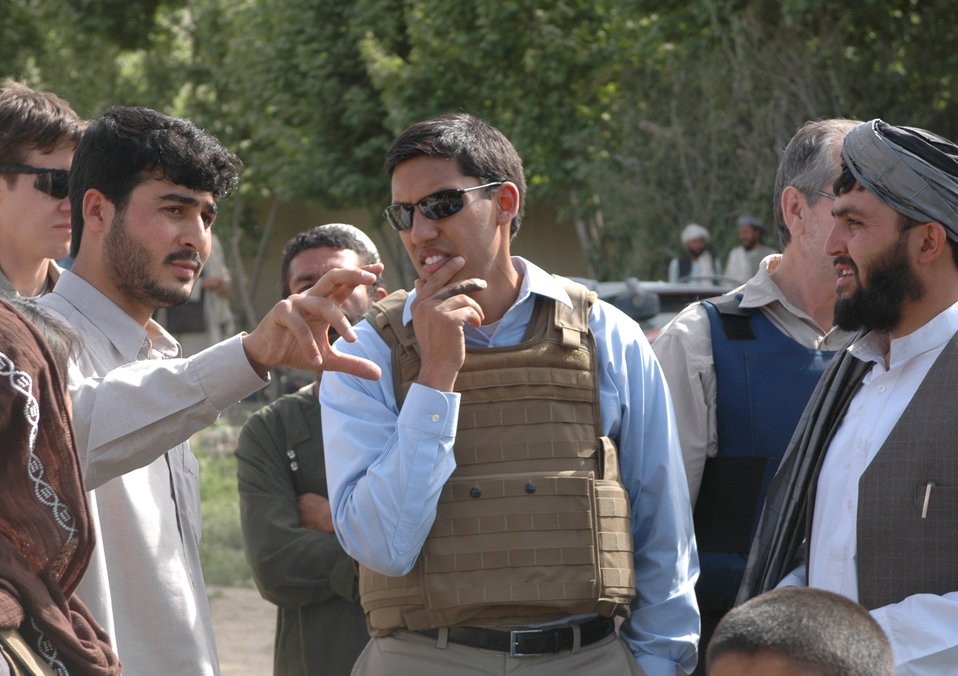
Dr Shah Visits Argandab April 10, 2010